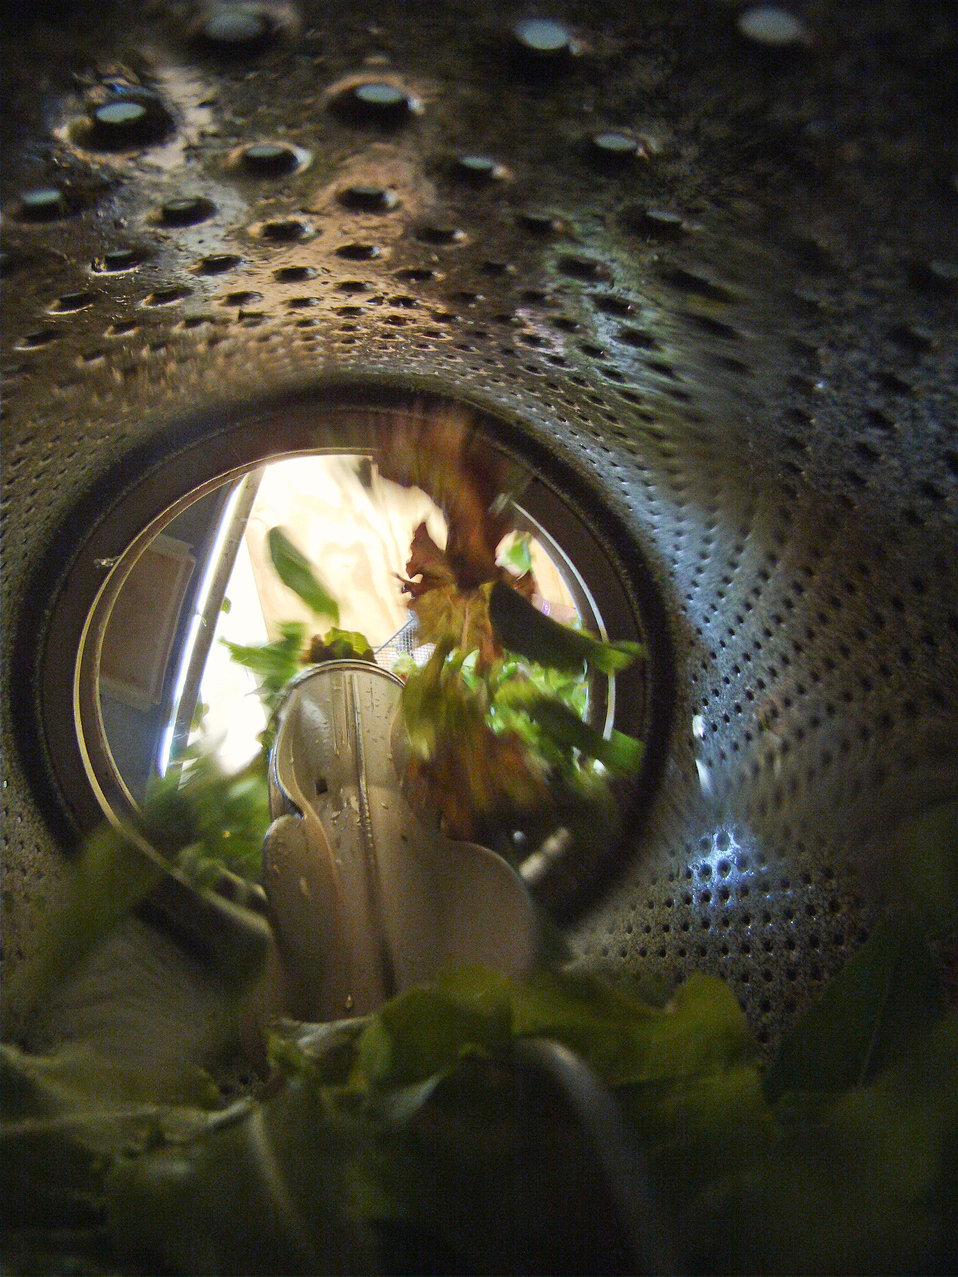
Hand washed baby lettuce leaves are slowly poured into a washing machine to dry in a spin cycle at Manakintowne Specialty Growers a 21-acre farm in Powhatan County, Virginia, where the Jo Pendergraph, her family and team raise specialty produce for chefs and markets of Richmond, Charlottesville and Williamsburg, VA area, on Friday, May 6, 2011. This includes the online food hub of Lulus Local Food served by the Fall Line Farms cooperative. This is one of the farms that chefs get those seemingly unique greens such as French Sorrel, Pea Shoots, Frisee, Tat soi, Mizuna, Pink/green radish shoots, Sunflower shoots, Baby red mustard, Tuscan Kale, Beet greens. All harvested by hand and scissors. As well as micro greens such as Pak choi, Tat soi, Mizuna, Purple kohlrabi, Shungiku (edible chrysanthemum), Ruby chard, Purple/Daikon/Triton radish, Red amaranth and Bull's Blood Beet. Edible flowers such as African Blue Basil, Nasturtiums, Johnny Jump Ups, and Chive blossoms Dianthus (pinks) are grown here. The seasonal choices are listed by suppliers and ordered by members on Lulus Local Food website, the food is distributed to pick-up points in the Richmond, VA area. They also offer a wide variety of household food staples and specialty fruits, vegetables, meats, soaps, eggs, cheeses, flowers, honey, pastas, sauces, syrups, baked goods, mushrooms, flour and grains from and for the Richmond. VA area.